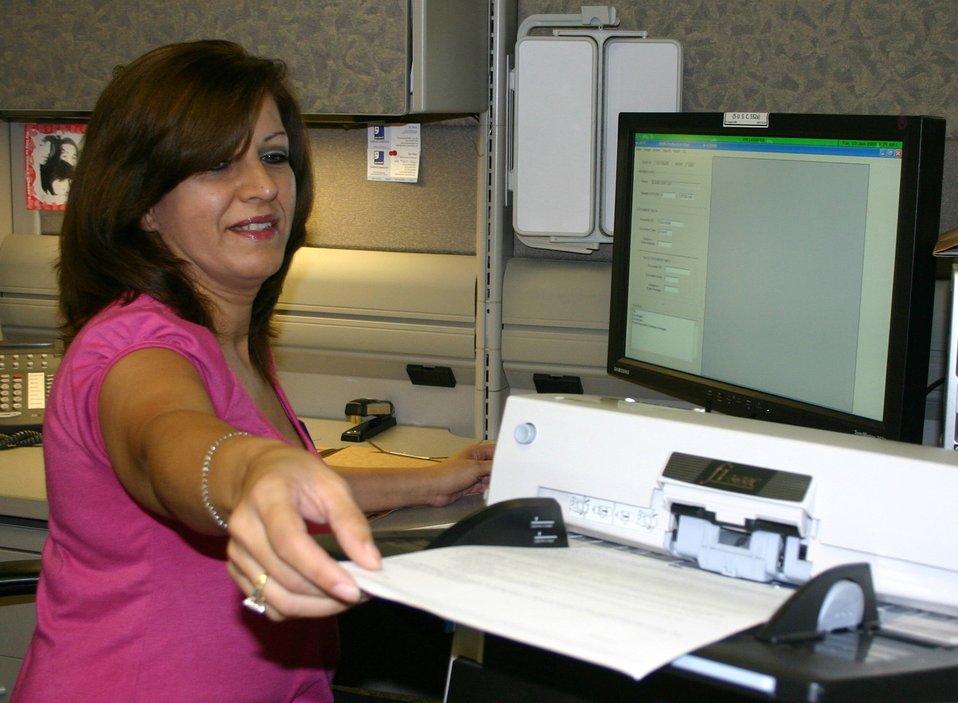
Final record scan moves AFPC closer to total virtual service

Blanca Rubio, a contract scanning team leader at the Air Force Personnel Center at Randolph Air Force Base, Texas, scans the last paper unit personnel record June 3. Since September 2006, AFPC specialists have scanned about 325,000 records. The paper-to-electronic records transition is part of the Air Force's ongoing commitment to personnel services delivery transformation